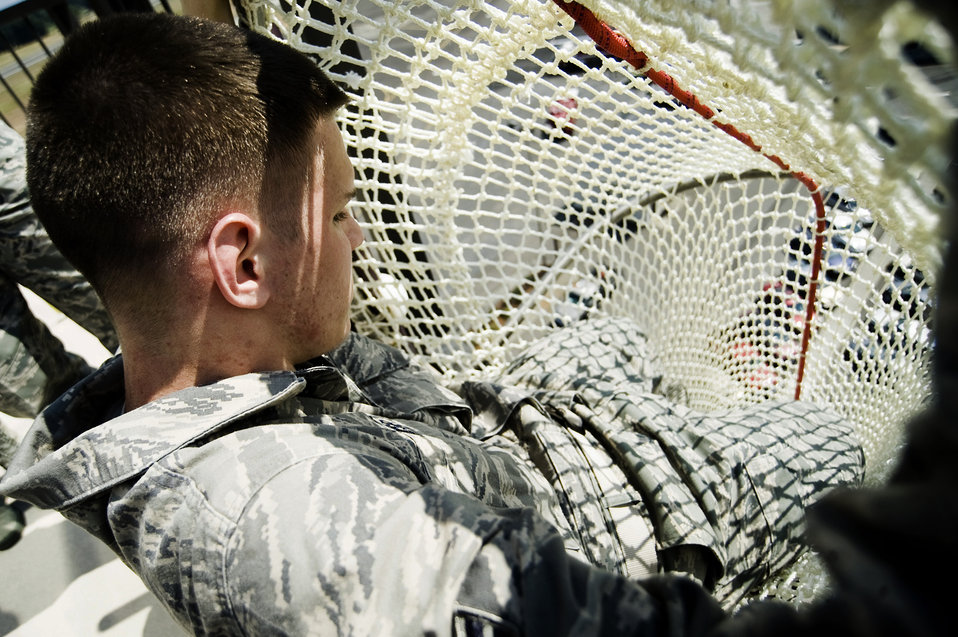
Air traffic controllers practice emergency exit procedures

Airman 1st Class Ryan Crisp prepares to freefall down the evacuation chute during training Aug. 3, 2010, at Joint Base Lewis McChord, Wash. Airmen Crisp is an air traffic controller with the 62nd Operations Support Squadron.